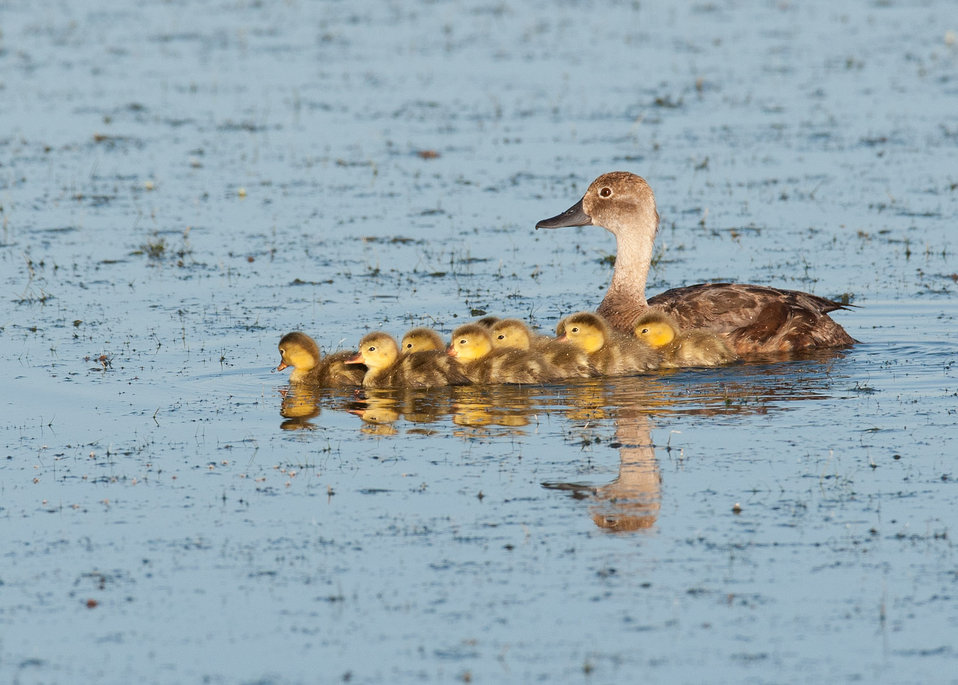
A Readhead Hen Swimming with her Babies

The lands of the refuge were established to protect and provide habitat for migratory birds that cross State lines and international borders and are by law a Federal trust responsibility.

The refuge is of great value to waterfowl and shorebirds, as well as other migrating water-dependent bird species, because of the diversity of wetland and upland habitats that provide for the diverse life cycle needs of these species.